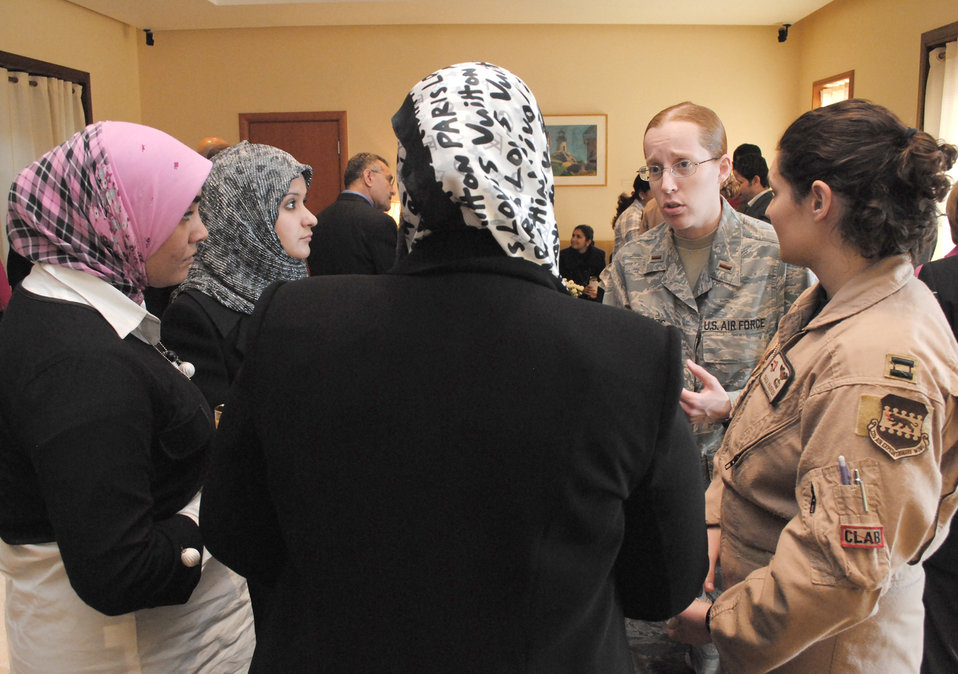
Horizon East

2nd Lt. Lila McClintoc talks to several Iraqi women about her experiences in the aviation career field during a luncheon for the Horizon East Women in Aviation, International chapter at the U.S. Embassy Jan. 7, 2010, in Baghdad. The Women in Aviation, International was established to encourage women to seek opportunities in aviation career fields and interests. Lieutenant McClintoc is a maintenance officer from the 332nd Expeditionary Aircraft Maintenance Squadron.